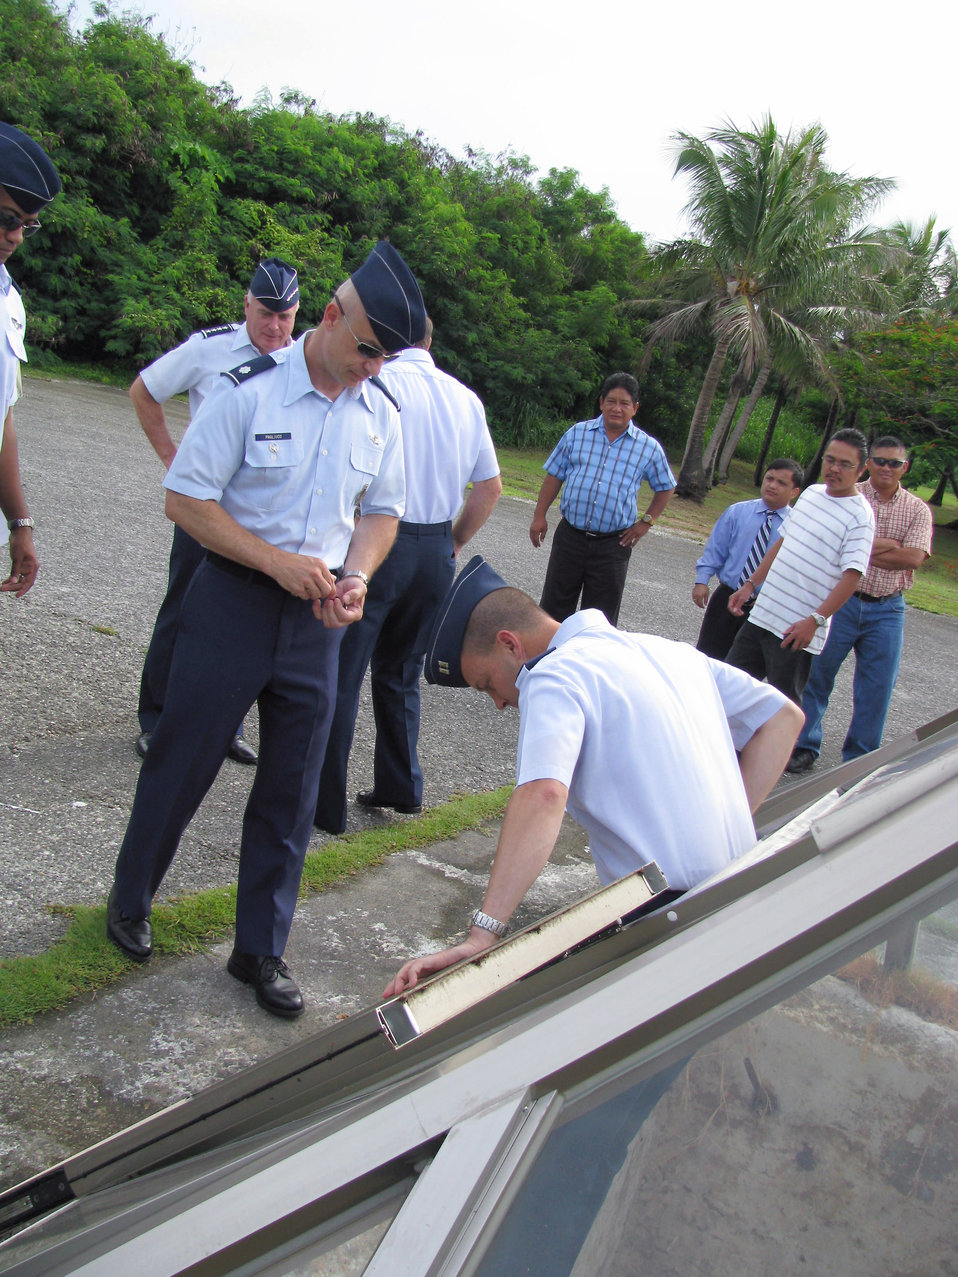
VCSAF describes airpower's key role in Pacific at Tinian symposium

Capt. Ron Poe climbs into the pit used to load atomic bombs onto B-29 Superfortresses at the end of World War II, while Lt. Col. Richard Pagliuco prepares to follow him, shortly before a wreath-laying ceremony Aug. 6, 2010, in Tinian, Commonwealth of Northern Mariana Islands. Both were invited by local officials to place unit coins in the bomb pit during a commemoration of Tinian's role in World War II. Colonel Pagliuco is the 20th Air Force deputy director of operations at F.E. Warren Air Force Base, Wyo., and Captain Poe is the 509th Aircraft Maintenance Squadron Aircraft Maintenance Unit officer in charge at Whiteman AFB, Mo.